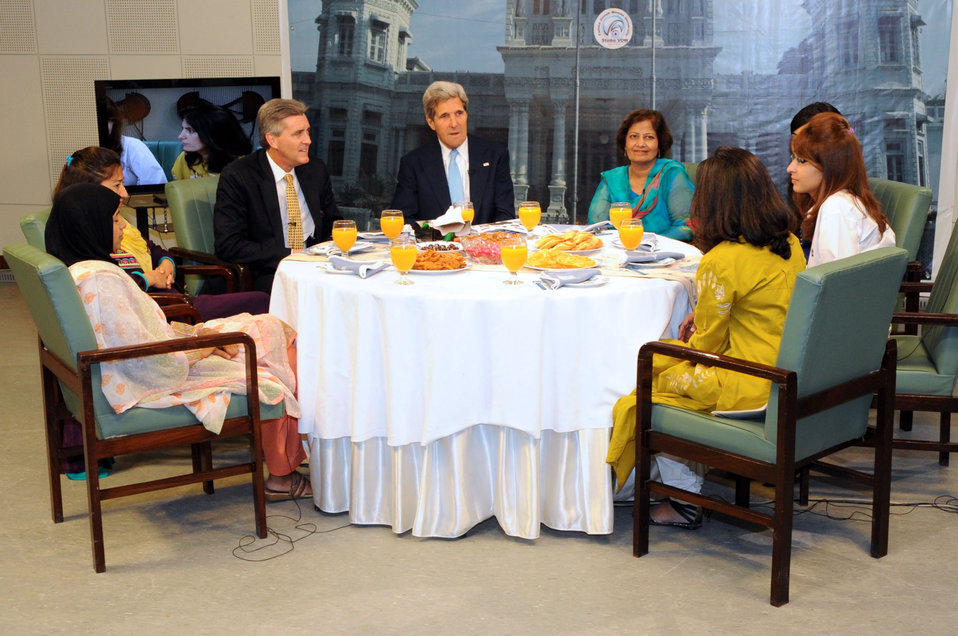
Secretary Kerry Breaks the Fast With Fatimah Jinnah Women's University Graduates

U.S. Secretary of State John Kerry breaks the daily Ramadan fast with an Iftar among a group of women graduates at the Fatimah Jinnah Women's University in Rawalpindi, Pakistan, during a visit on August 1, 2013.